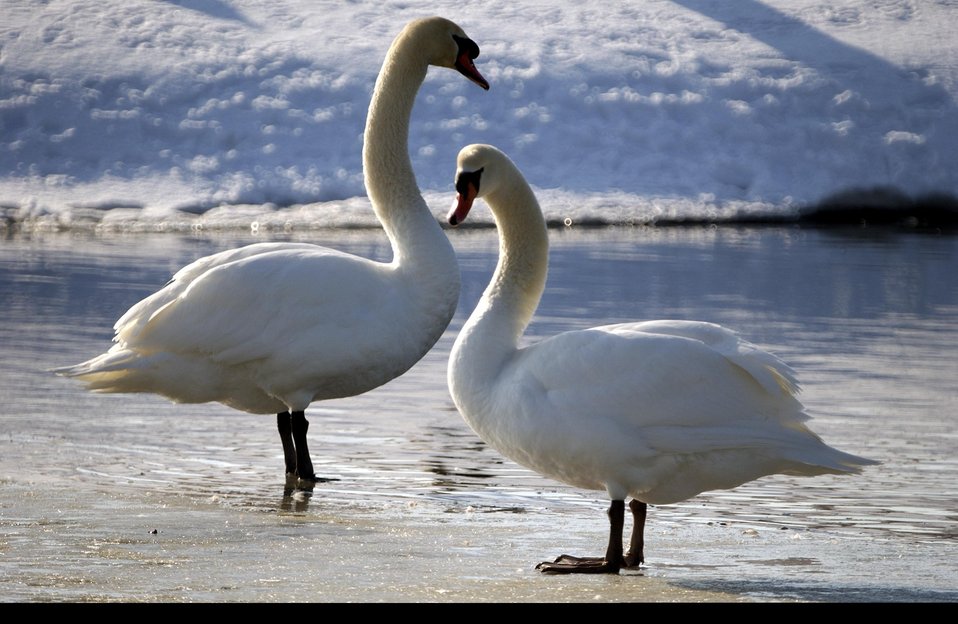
MUTE SWANS AT THE MAIN INJECTOR POND OF THE FERMI NATIONAL ACCELERATOR LABORATORY SITE.

THE SITE IS HOME TO A VARIETY OF BIRDS AND VEGETATION. THE FERMI NATIONAL ACCELERATOR LAB ADVANCES THE UNDERSTANDING OF THE FUNDAMENTAL NATURE OF MATTER AND ENERGY BY PROVIDING LEADERSHIP AND RESOURCES FOR QUALIFIED RESEARCHERS TO CONDUCT BASIC RESEARCH AT THE FRONTIERS OF HIGH ENERGY PHYSICS AND RELATED DISCIPLINES.